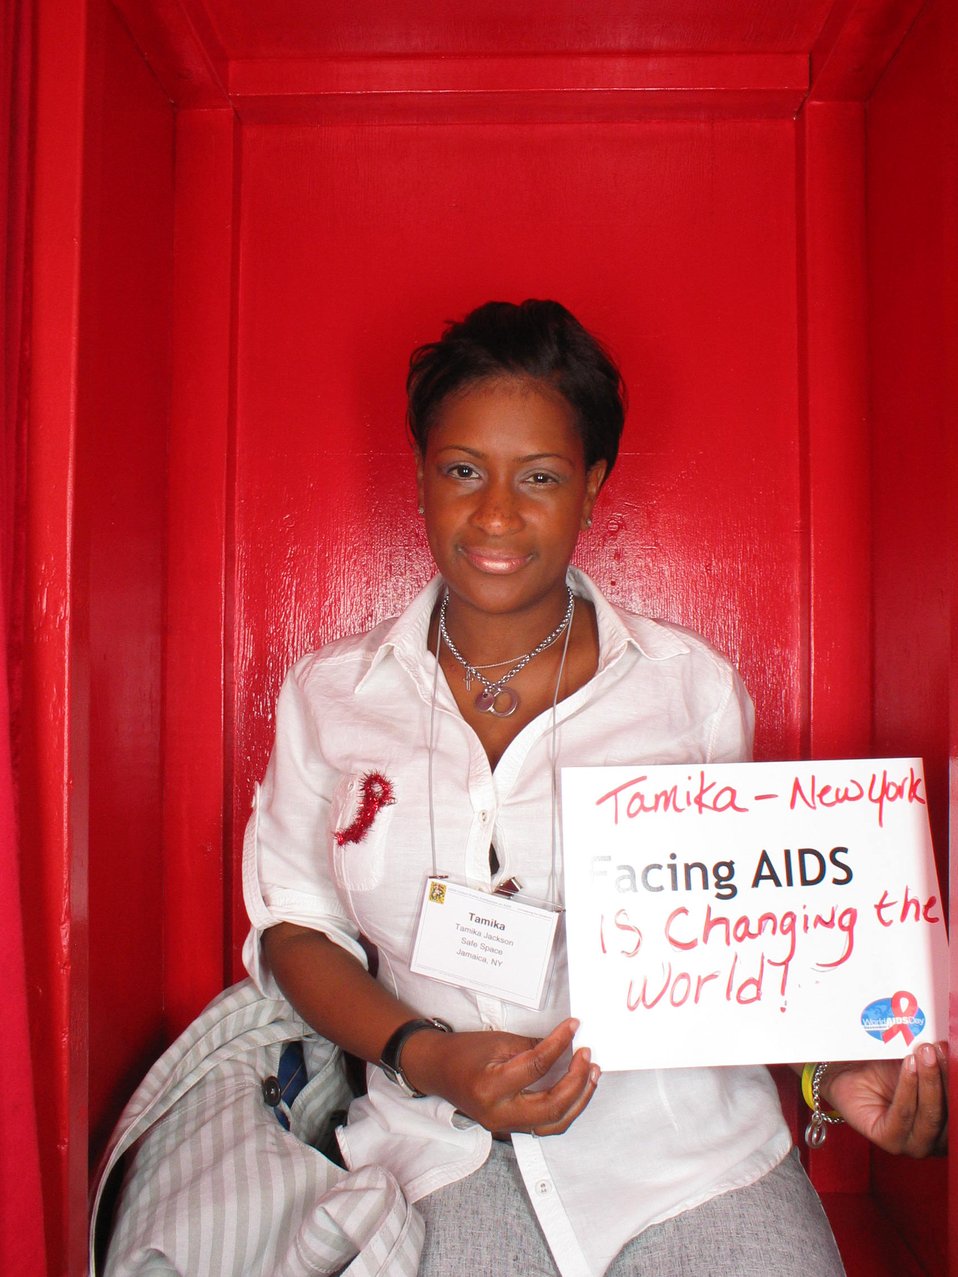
Facing AIDS is changing the world!